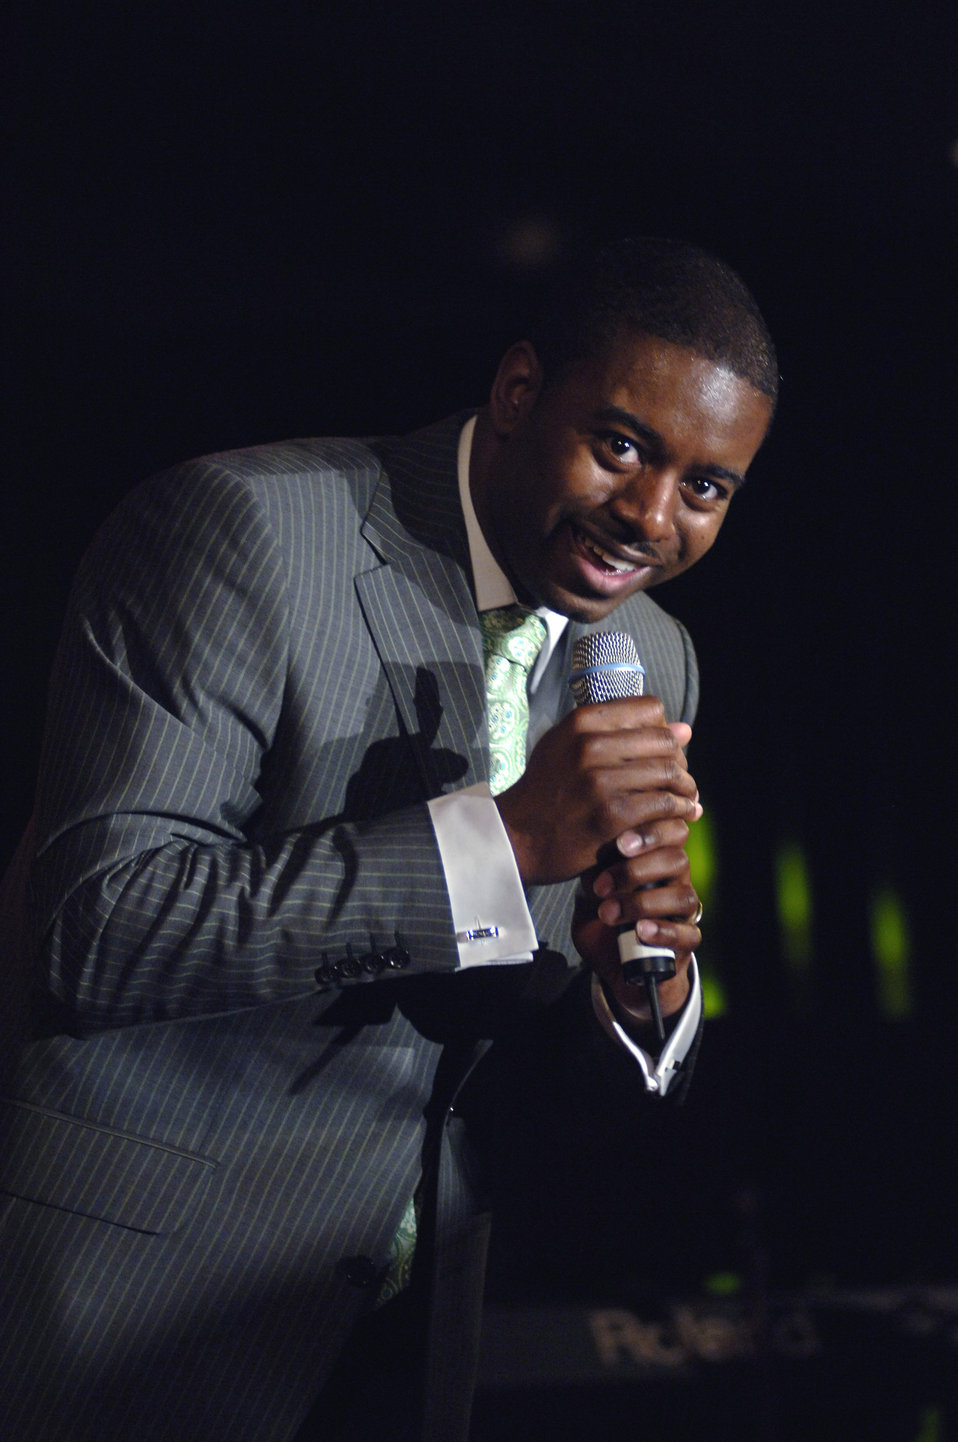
'USAFE Idol'

Senior Airman Antonio Howard sings